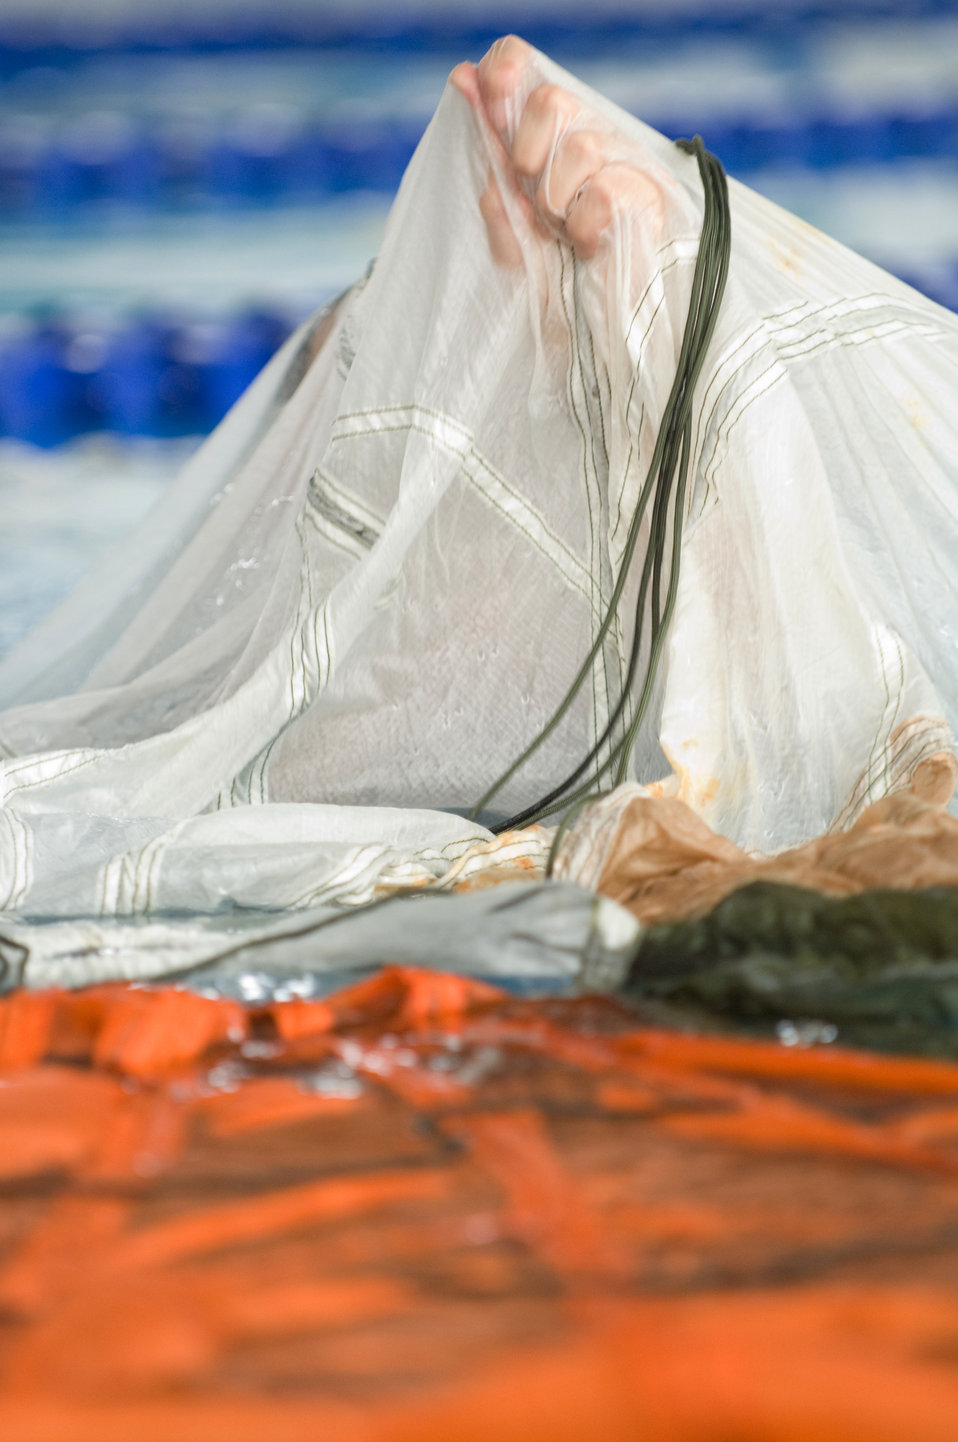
No easy day at the pool

A Yokota aircrew member tries to extricate himself from a parachute canopy during water survival refresher training recently at the natatorium indoor pool at Yokota Air Base, Japan. Survival, evasion, resistance and escape technicians teach the course to aircrew members at least once every three years. The training is especially important for Yokota aircrews, who routinely fly long distances over large bodies of water in the Pacific Rim.